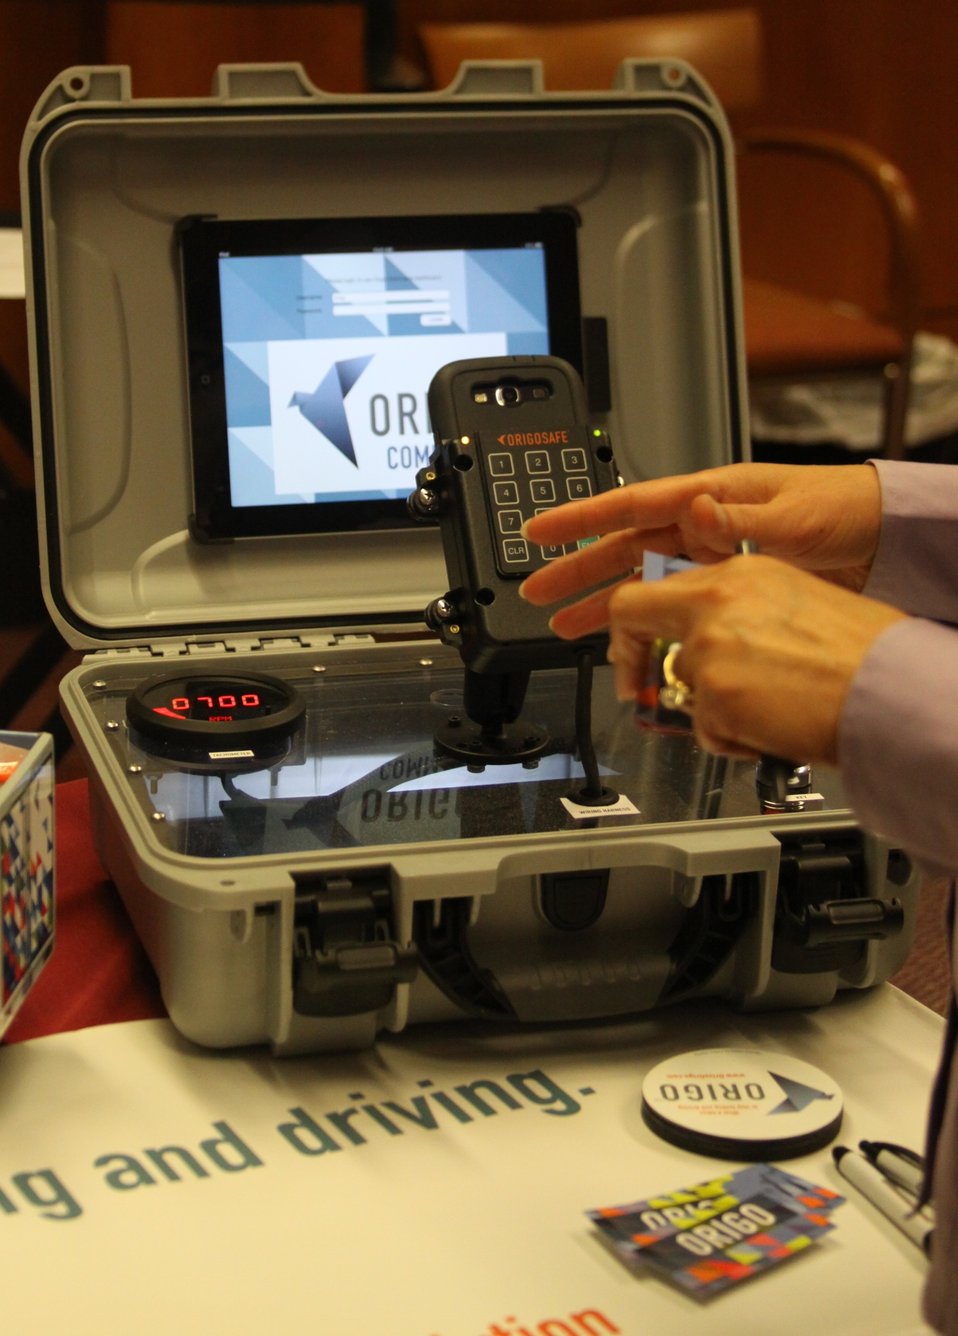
Distracted Driving Technology Showcase April 19, 2013